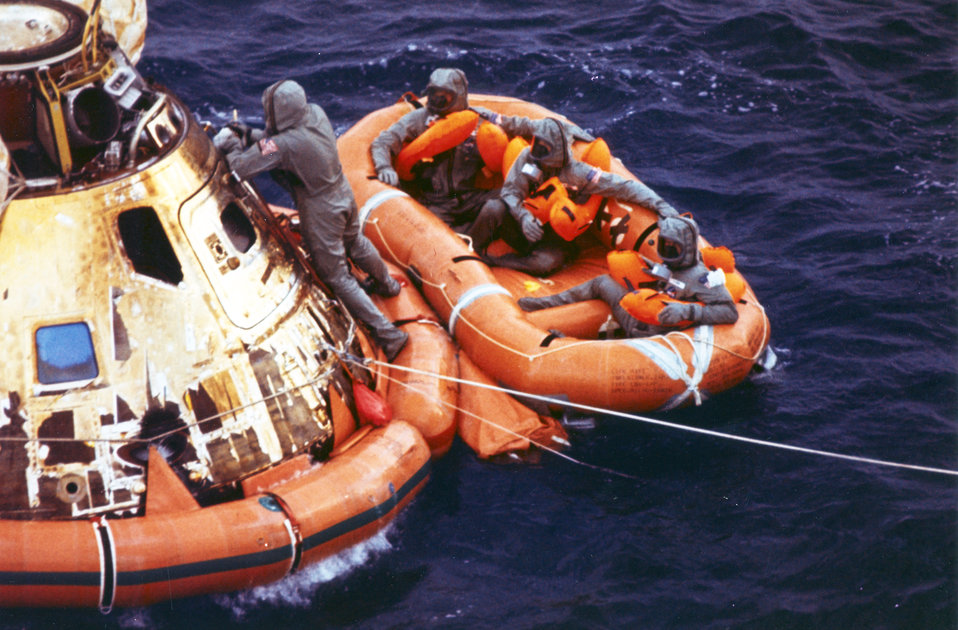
Historic capsule makes trip to body shop

First Lt. Clancy Hatleberg closes the Apollo 11 spacecraft hatch as astronauts Neil Armstrong, Michael Collins and Buzz Aldrin, Jr. await helicopter pickup from their life raft in 1969. The command module moved from Patrick Air Force Base, Fla. for refurbishment was used by pararescuemen to train for both the Apollo and Skylab programs. The 920th Rescue Wing provides emergency medical, rescue and recovery support for all space shuttle and rocket launches.